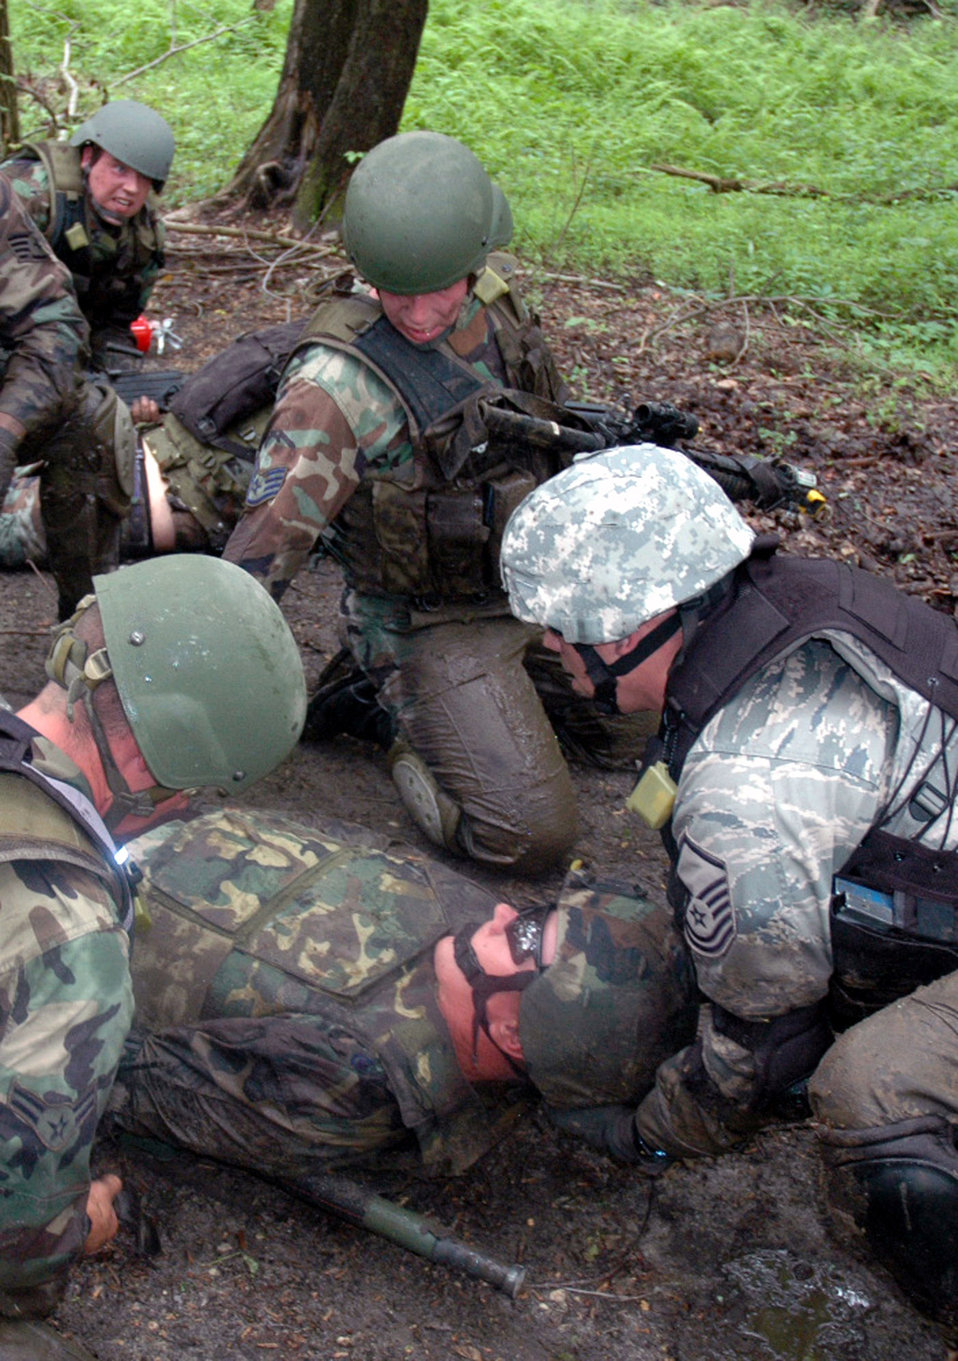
U.S. Air Force Expeditionary Center: Phoenix Warrior Training Course

Students in the Air Force Phoenix Warrior Training Course tend to a victim during training in a combat first aid class June 5 at Fort Dix, N.J. The course is taught by members of Air Force Expeditionary Center's Expeditionary Operations School and 421st Combat Training Squadron and prepares Airmen for upcoming deployments. Annually, the course trains more than 23,000 students in expeditionary and mobility air force-based courses both with in-residence and distance learning.